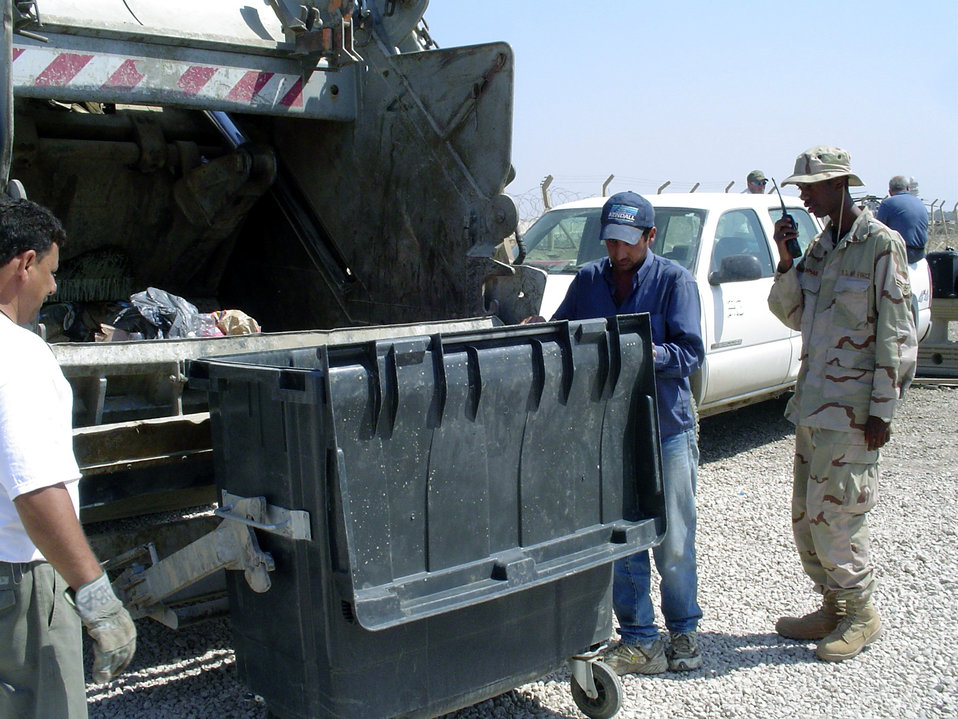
Working with Iraqis

CAMP SATHER, Iraq -- Airman 1st Class Larry Bowman monitors Iraqi sanitation workers here. He is an escort with the 447th Expeditionary Civil Engineer Squadron. Escorts work together with the Iraqis to make sure discarded military equipment or sensitive material is not inadvertently taken off the camp.